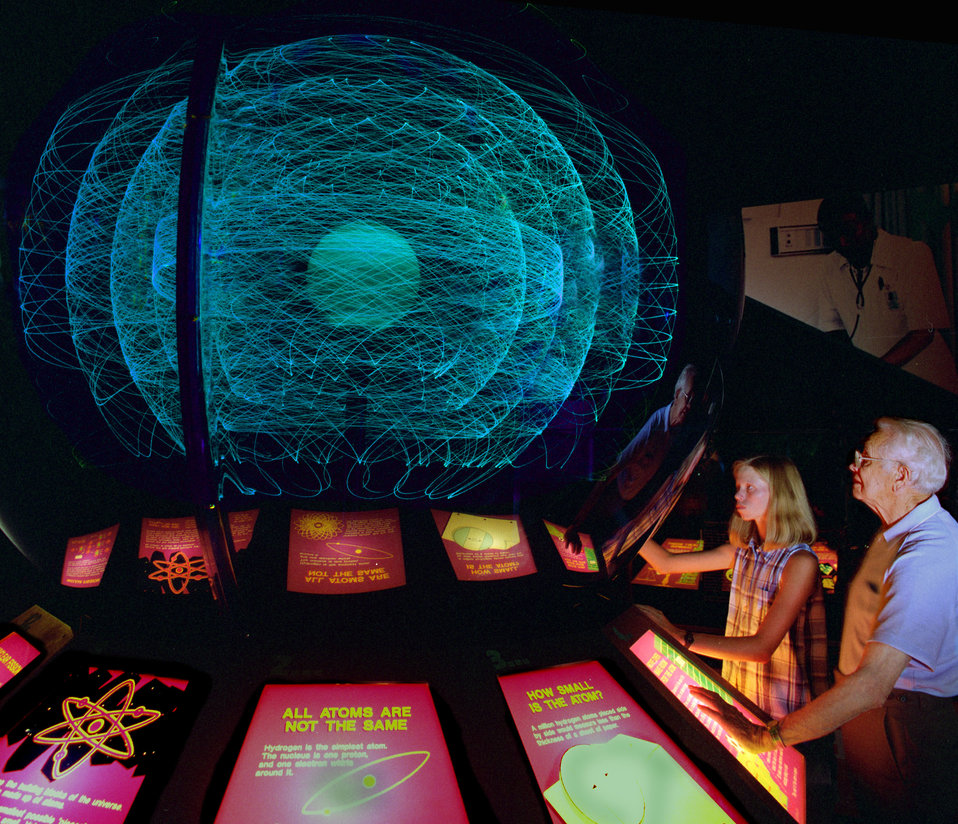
Atom Model at the American Museum of Science and Energy Oak Ridge

92-7159 DOE photo by Lynn Freeny

Atom Model at the American Museum of Science and Energy Oak Ridge Tennessee